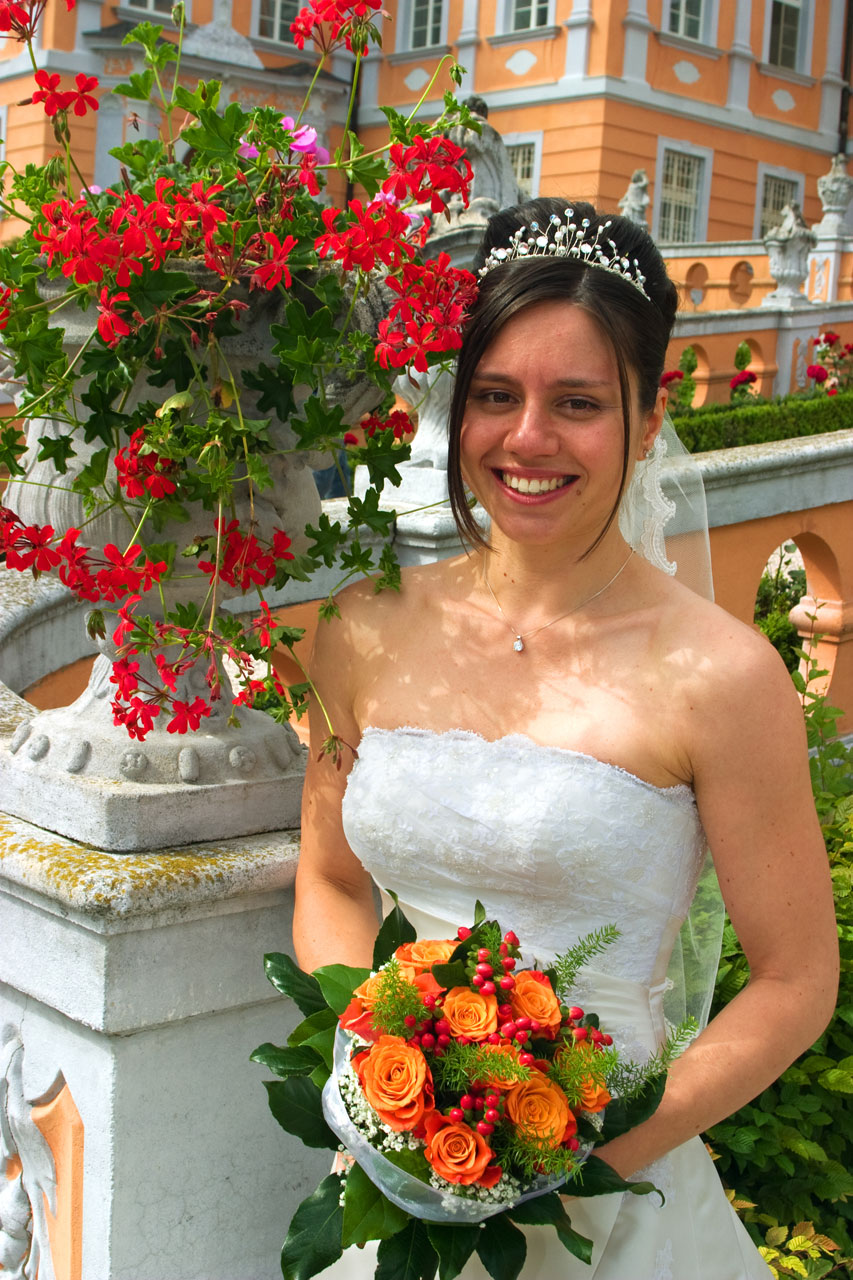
Bride standing next to the flowers.